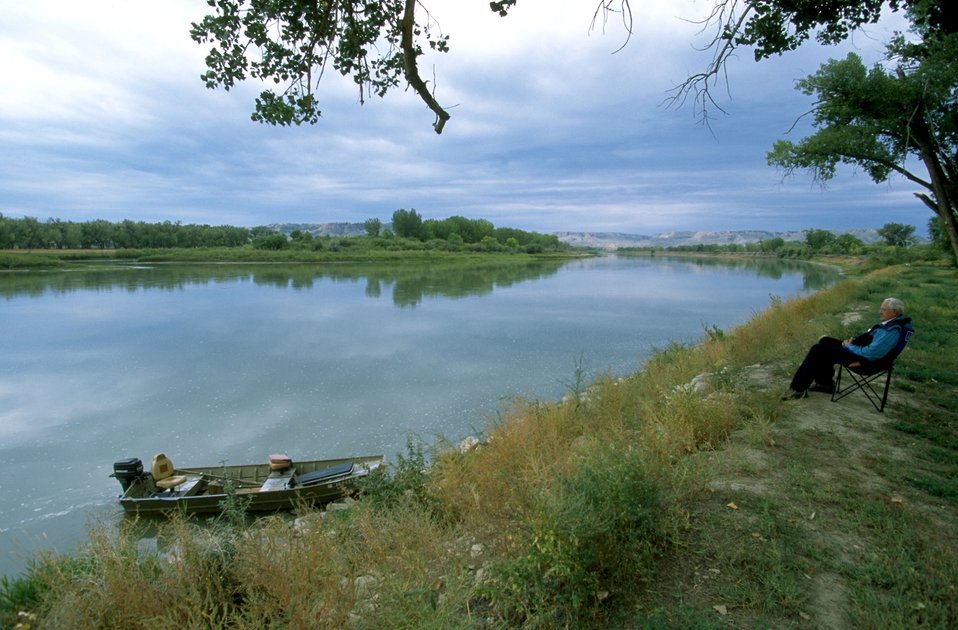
Relaxing along the Upper Missouri River